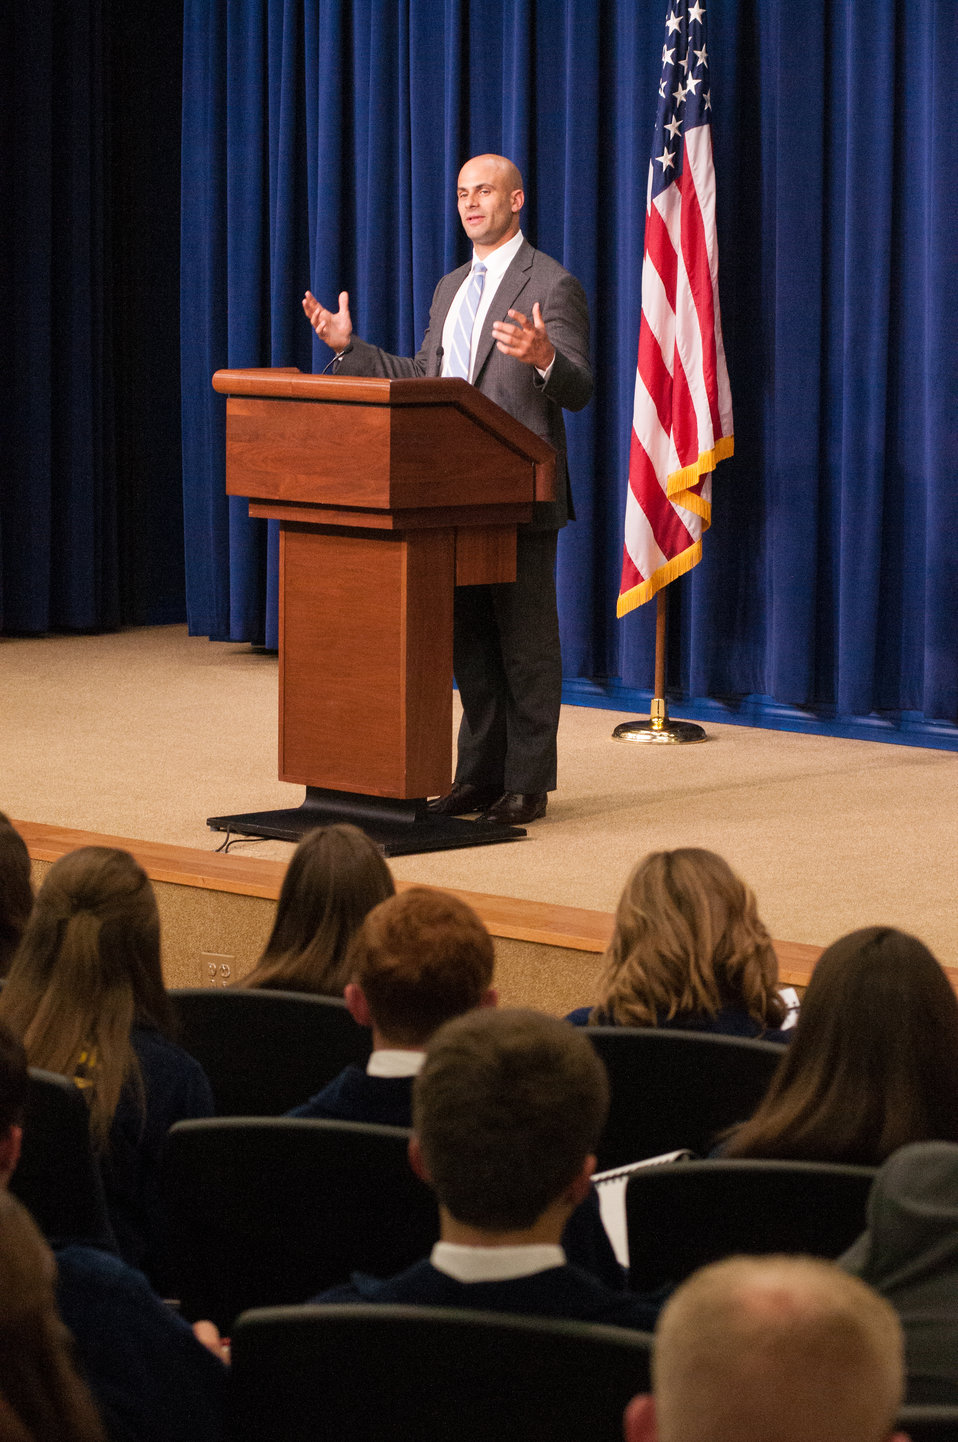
White House Chef Sam Kass speaks at a meeting of the White House Rural Council to an audience of the National State President’s Conference of the FFA on Wednesday, Jul. 24, 2013 in Washington, D.C. Chef Kass discussed nutrition and agriculture topics.